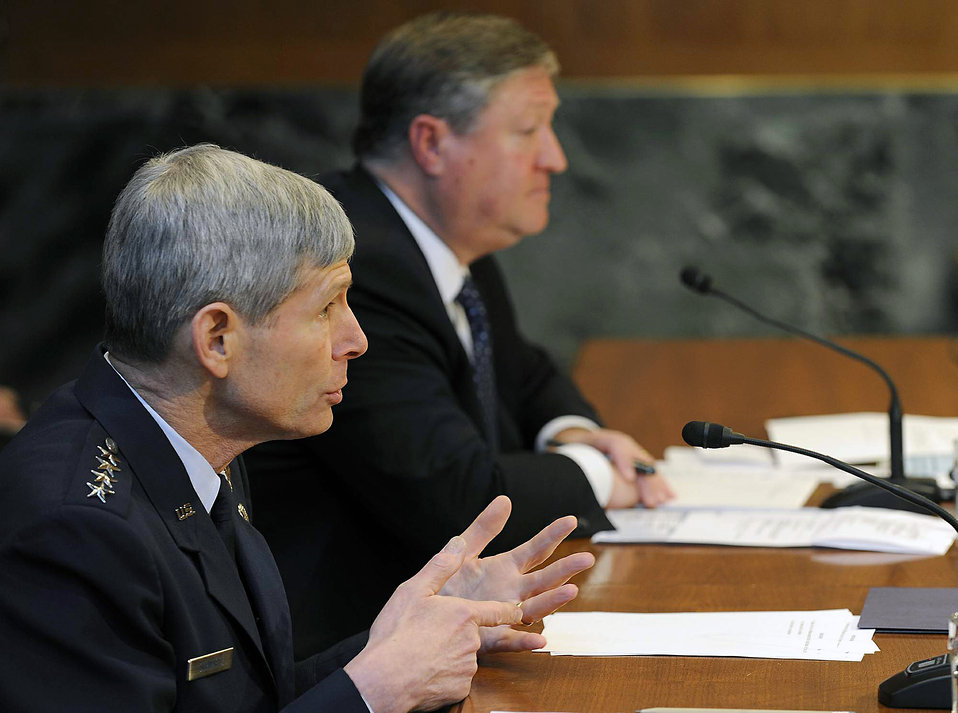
Air Force officials present budget to appropriations committees

Air Force Chief of Staff Gen. Norton Schwartz answers a question March 30, 2011, during the Senate Appropriations Committee’s Subcommittee on Defense hearing on the Air Force’s fiscal 2012 budget request in Washington, D.C. Secretary of the Air Force Michael Donley, right, also served as a witness.